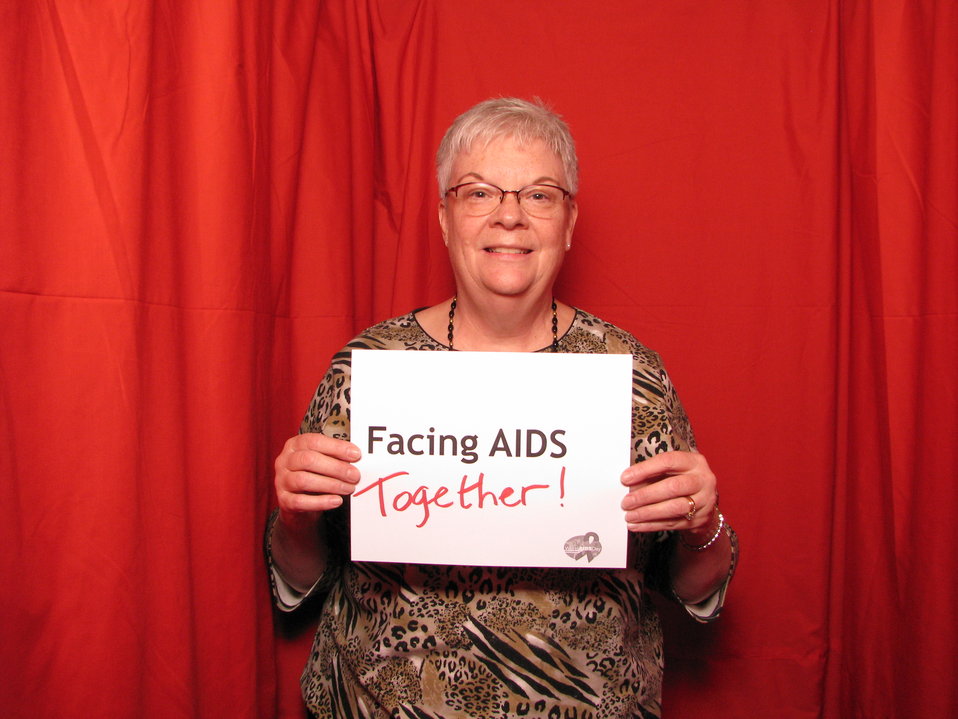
FACING AIDS together!

From the AIDS.gov photo booth at the U.S. Conference on AIDS, September 2010 (Orlando, FL).